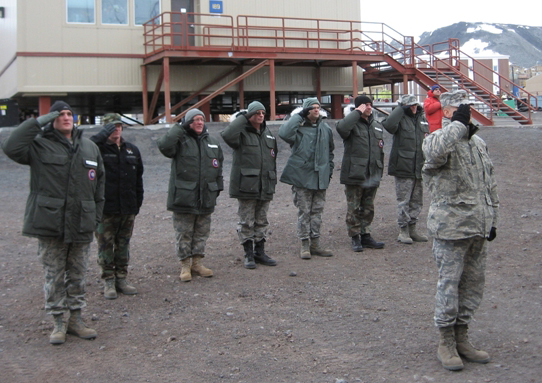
ODF retreat

As the 2009-2010 Operation Deep Freeze season winds down, Maj. Jeff Hedges, Joint Task Force Support Forces Antarctica executive officer, leads Airmen at McMurdo Station, Antarctica, during a retreat ceremony Feb. 16 2010, following the departure of the last LC-130 Hercules from the continent.